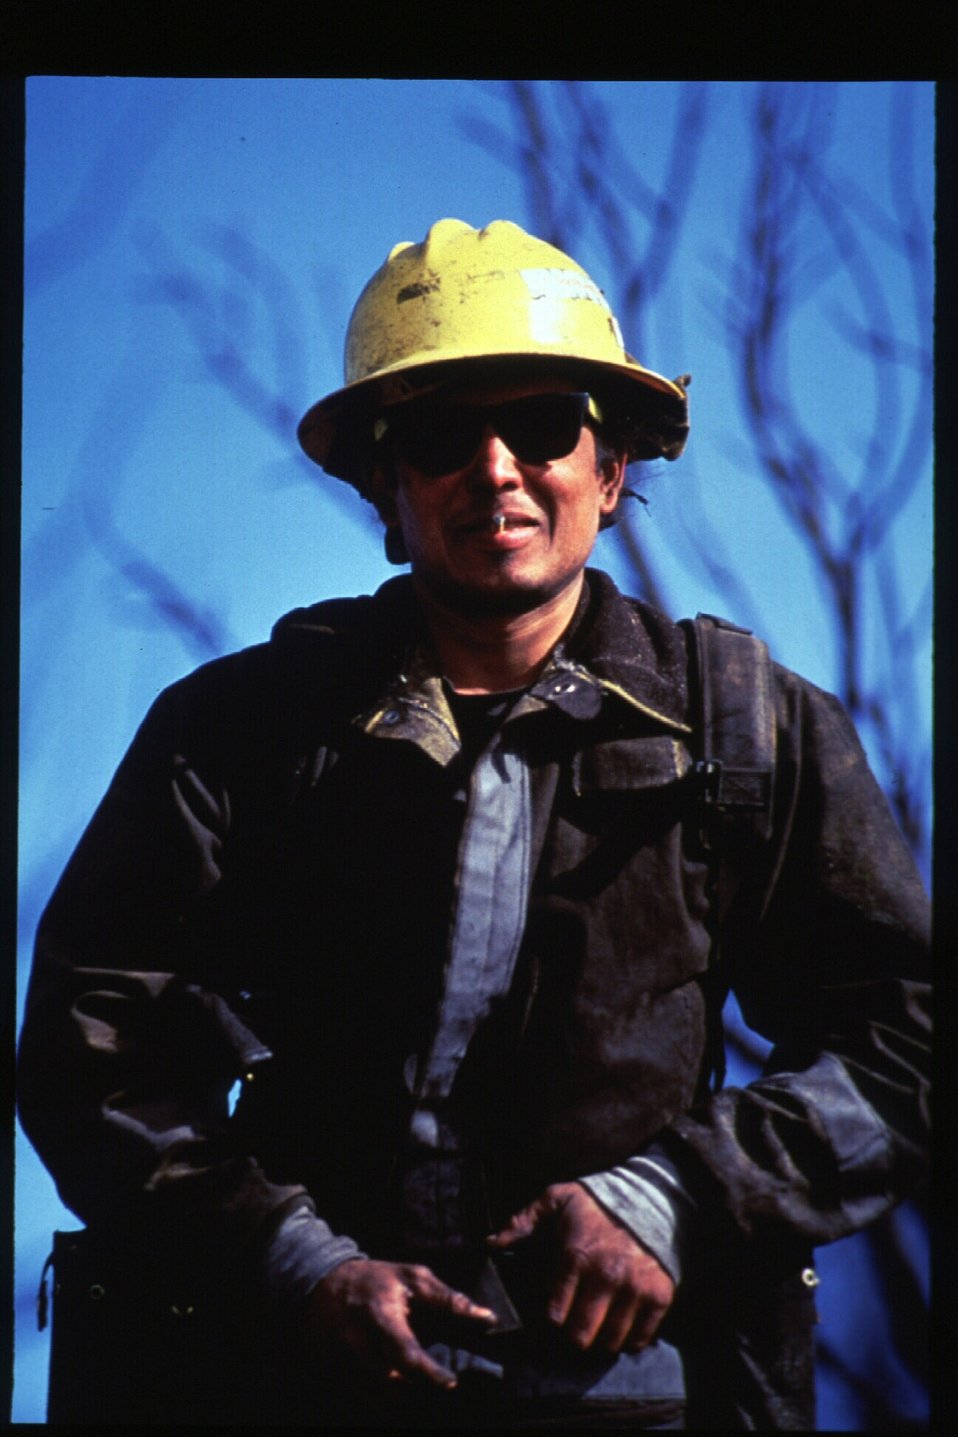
Boise Foothills Fire Danskin Mountains and South Fork of Boise River Wild Fire Fighter Four River Field Office LSRD Lower Snake River District